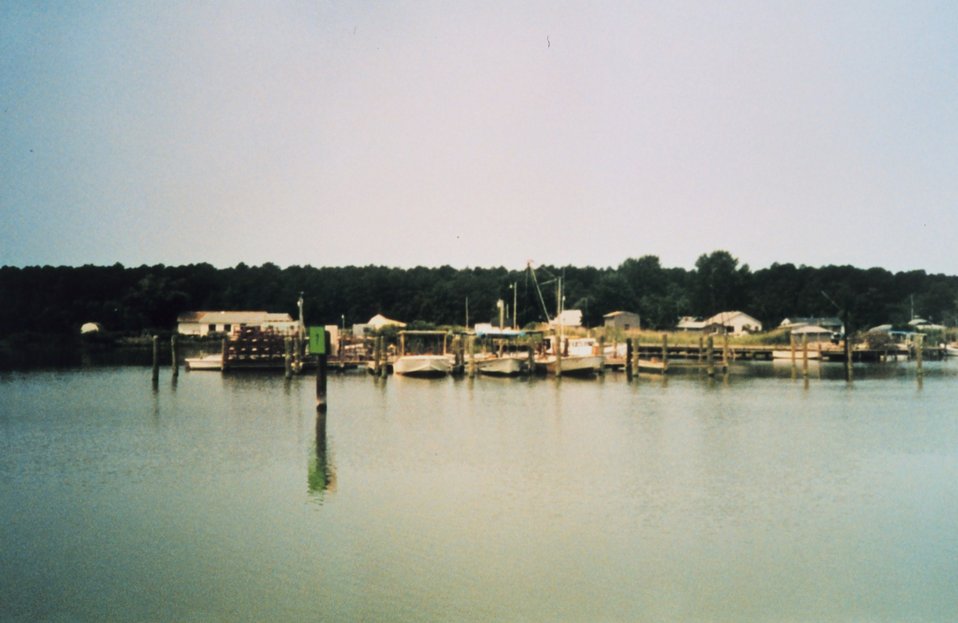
The harbor at Smith Island.